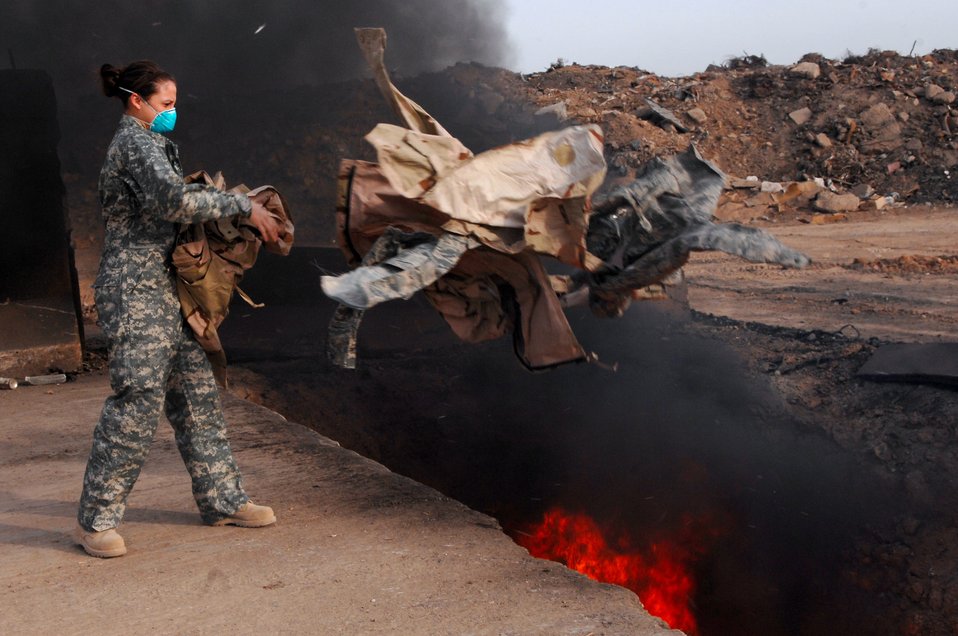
An ounce of prevention

Senior Airman Frances Gavalis tosses unserviceable military uniform items into a burn pit at Balad Air Base, Iraq, March 10. Clothing items turned in must be burned to ensure they cannot be used by opposing forces. Airman Gavalis is deployed from Kirtland Air Force Base, N.M.